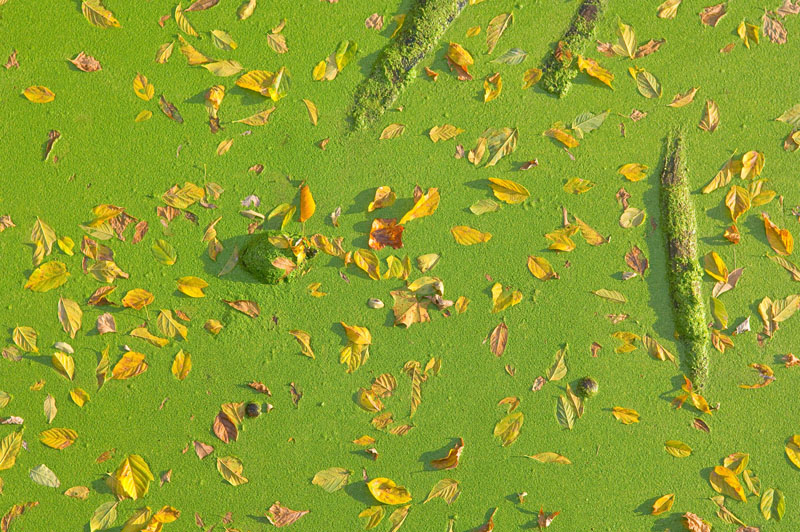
Algae bloom in Reflecting Pool, Washington, DC. 2007 Potomac River, Chesapeake Bay watershed.